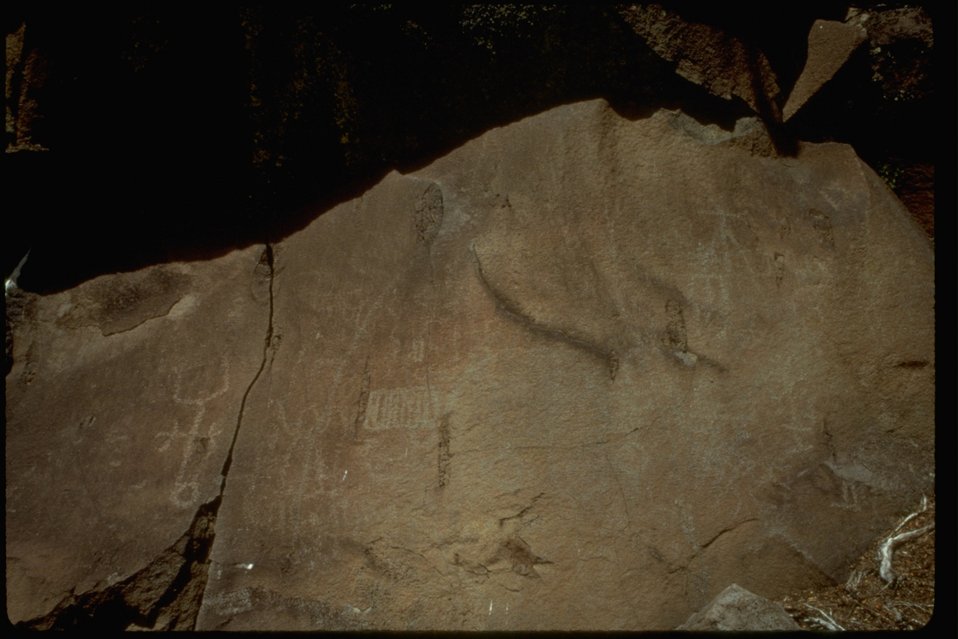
Petroglyphs along Fish Creek Rim. OR 1-117